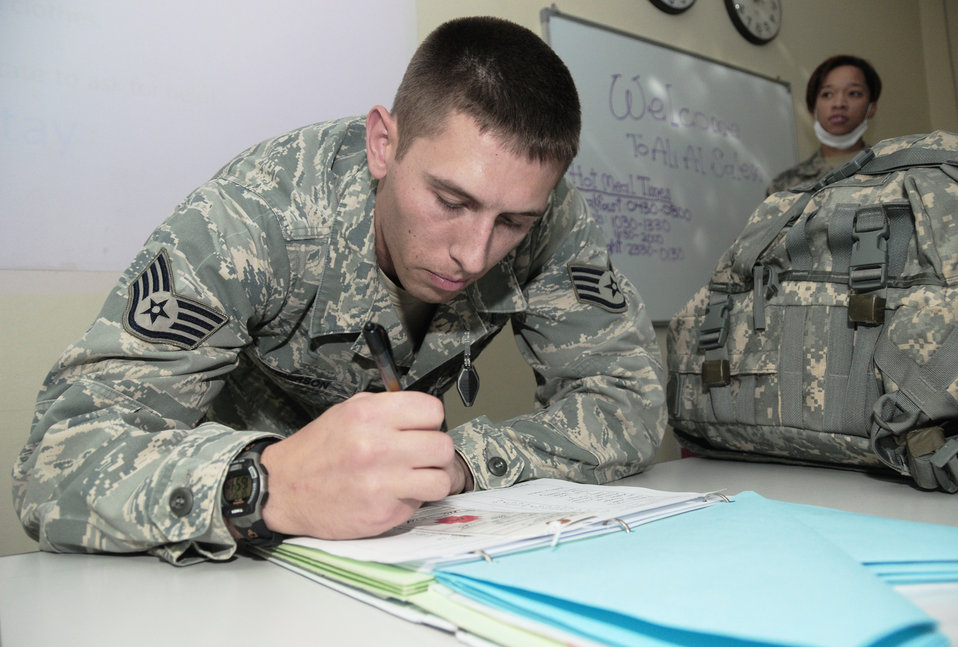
Airmen salute nurses, medical technicans

Staff Sgt. Chris Henderson processes patients into the contingency aeromedical staging facility May 1, 2010, at an air base in Southwest Asia. Sergeant Henderson is a 386th Expeditionary Medical Group medical technician.